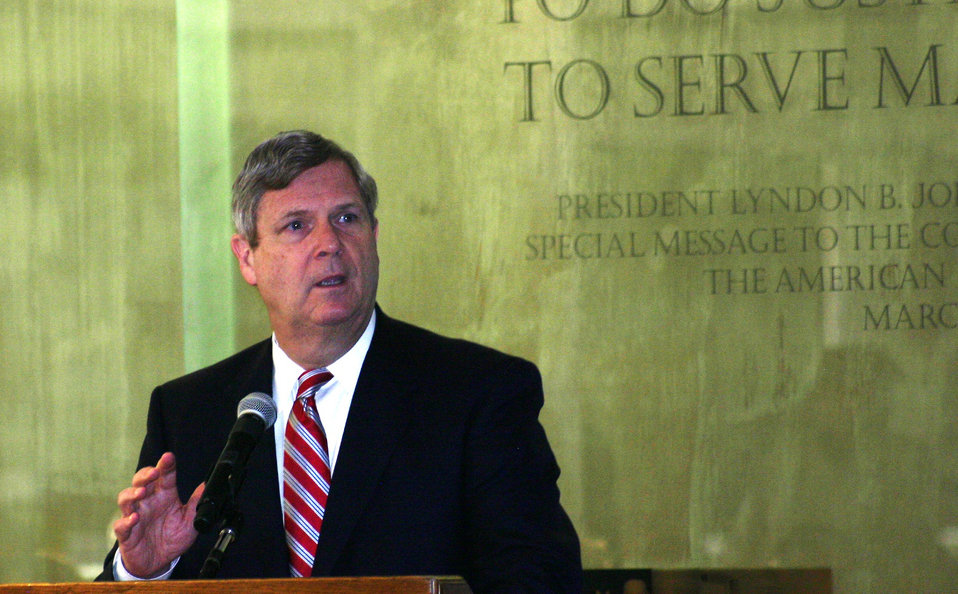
U.S. Secretary of Agriculture Tom Vilsack discusses 'Unlimited Opportunity for Homegrown Energy' at the LBJ School of Public Affairs in Austin, TX, on Feb. 13, 2013.